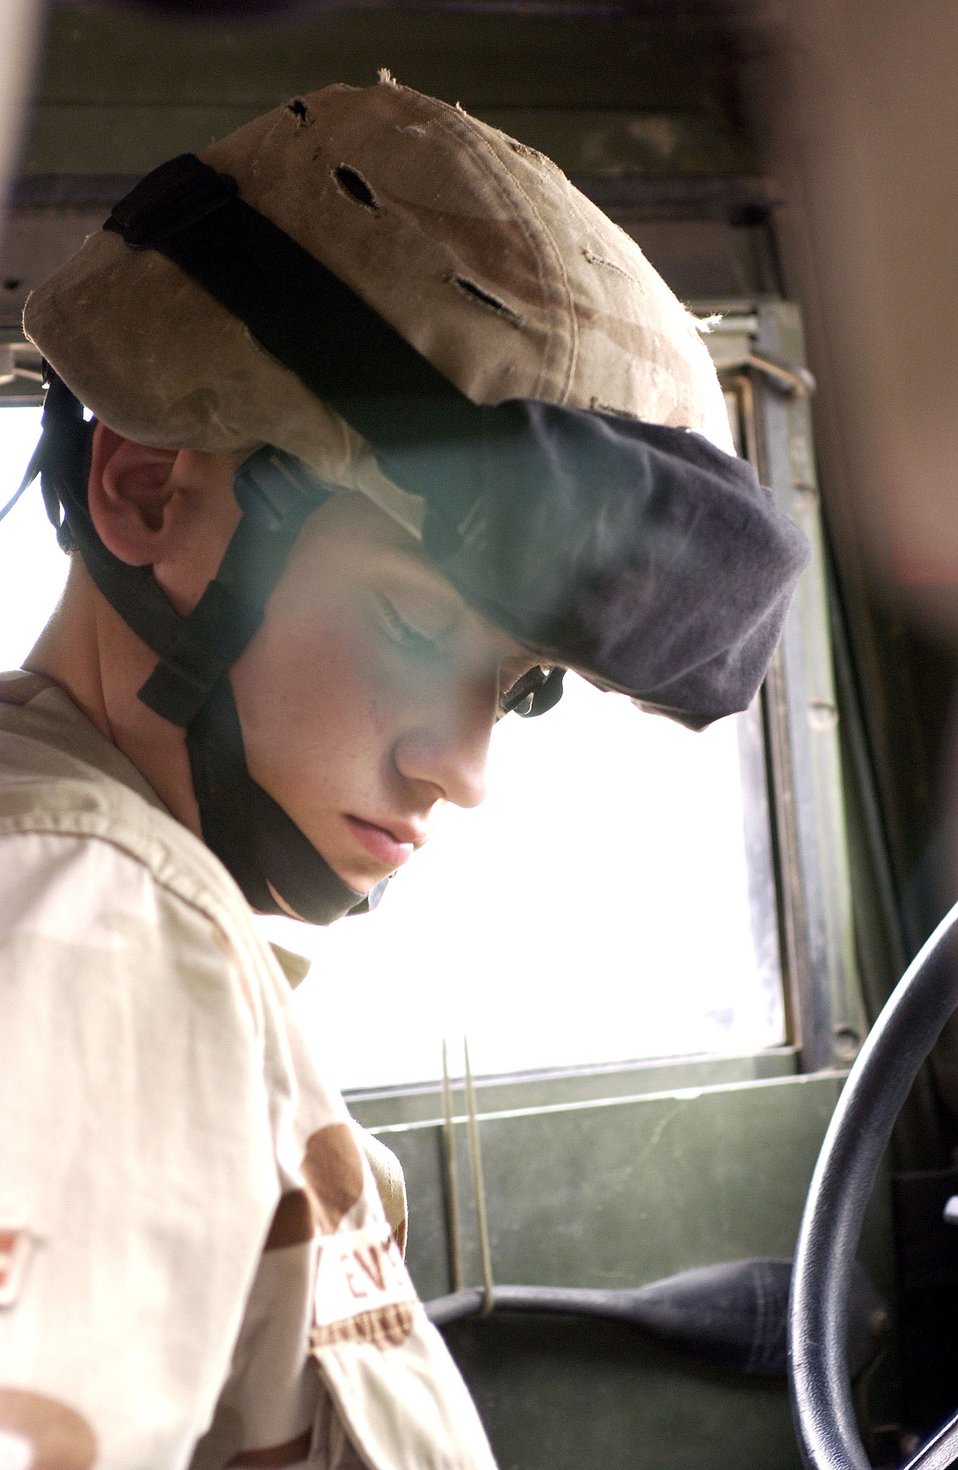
Convoy ops

CAMP BUCCA, Iraq (AFPN) -- Airman 1st Class Collin Everson buckles his seat belt before departing on a mission. More than 700 Airmen are deployed here providing security for the base, the Theater Internment Facility and convoy operations. Airman Everson is a convoy driver deployed here from Mountain Home Air Force Base, Idaho with the 586th Expeditionary Security Forces Squadron.